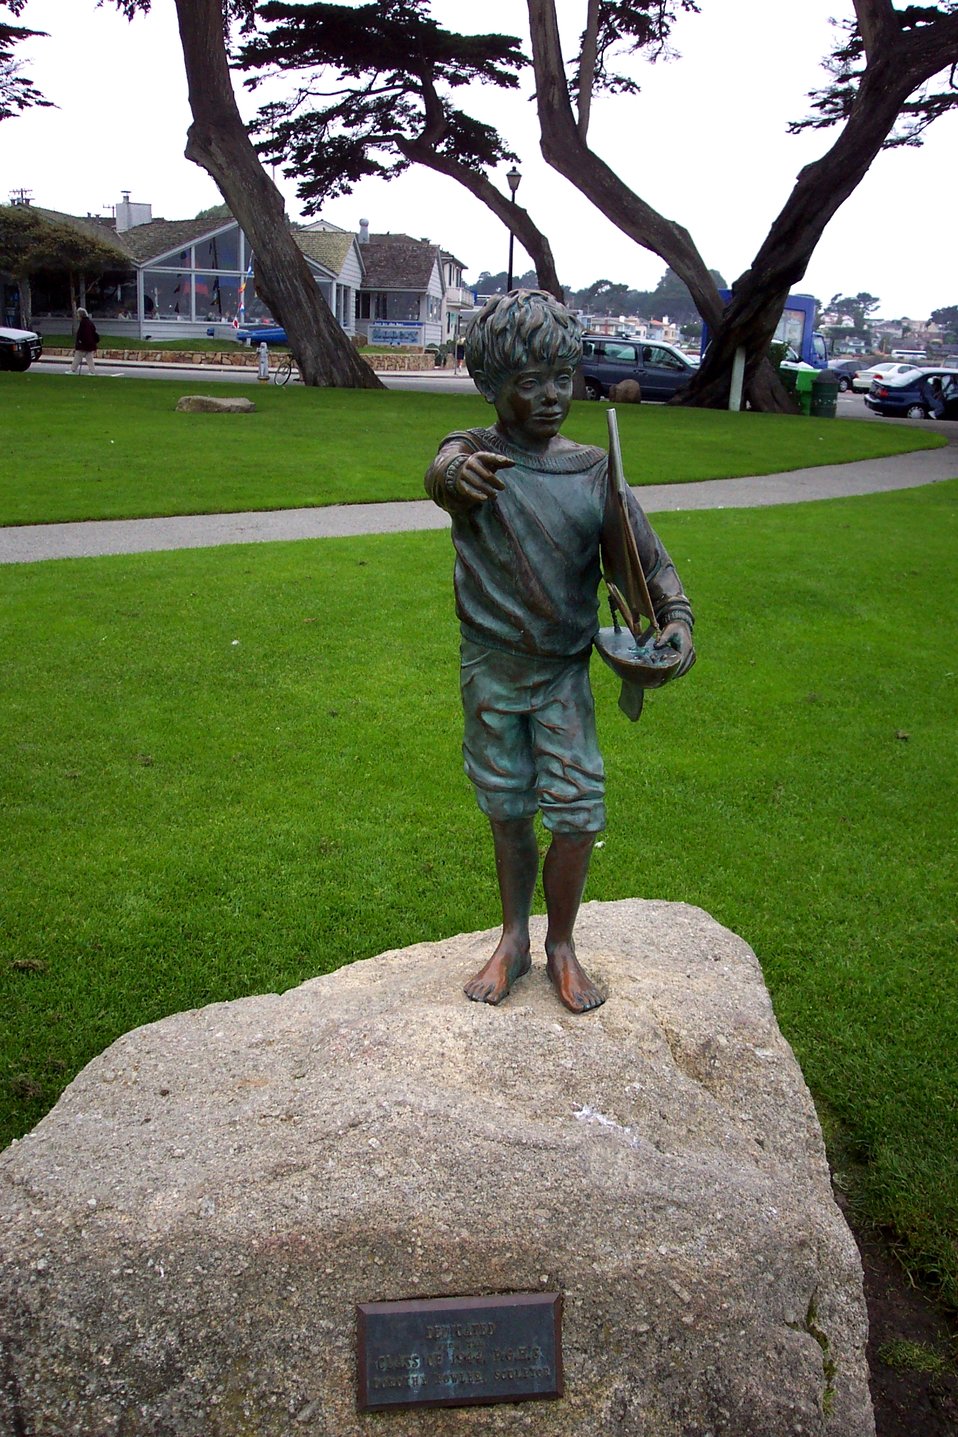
World War I era statue in Lovers' Point Park at Pacific Grove.